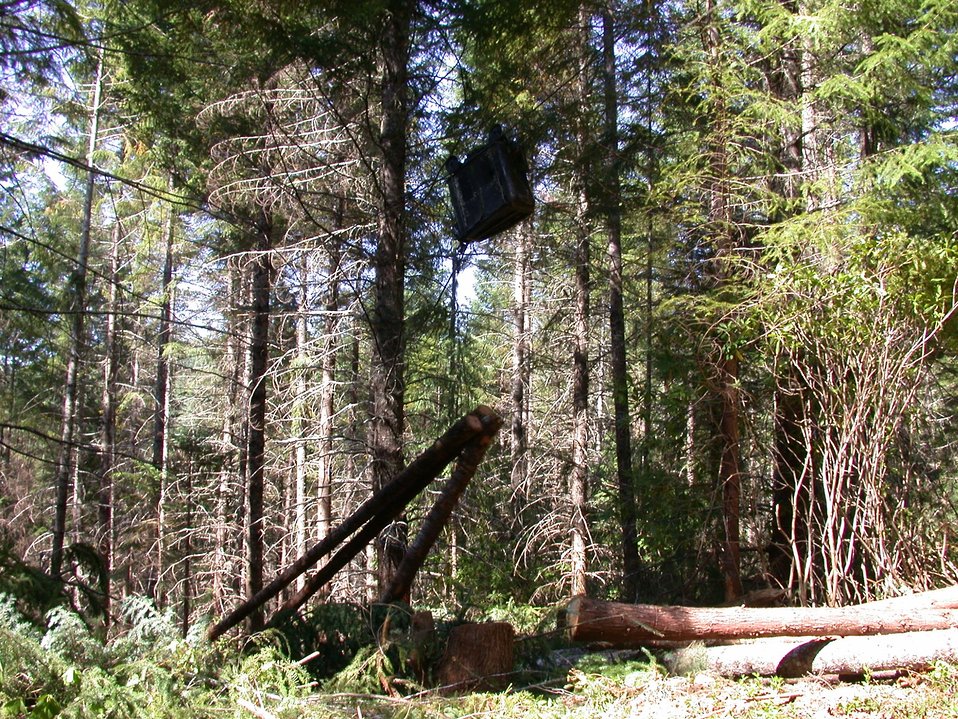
Camas East Timber Sale in Late Successional Reserve.